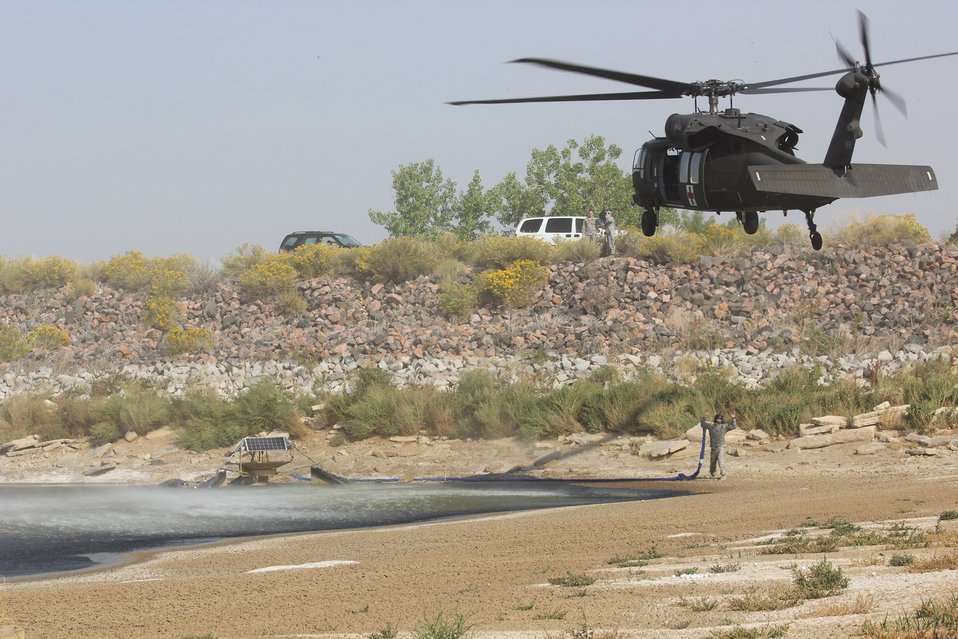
Air Force Helps USFWS with Equipment Move

Personnel from the 460th Space Wing, Air Force Space Command at Buckley Air Force base conducted a recent training mission to help the Service remove a solar aerator from Williams Lake.

The lake may be drained in the near future due to bird air strike concerns on the base so the aerator will be loaned to Warren Air Force base for the near future. This effort by the 460th Space Wing saved the U.S. Fish and Wildlife Service considerable time and effort in removing this heavy equipment.